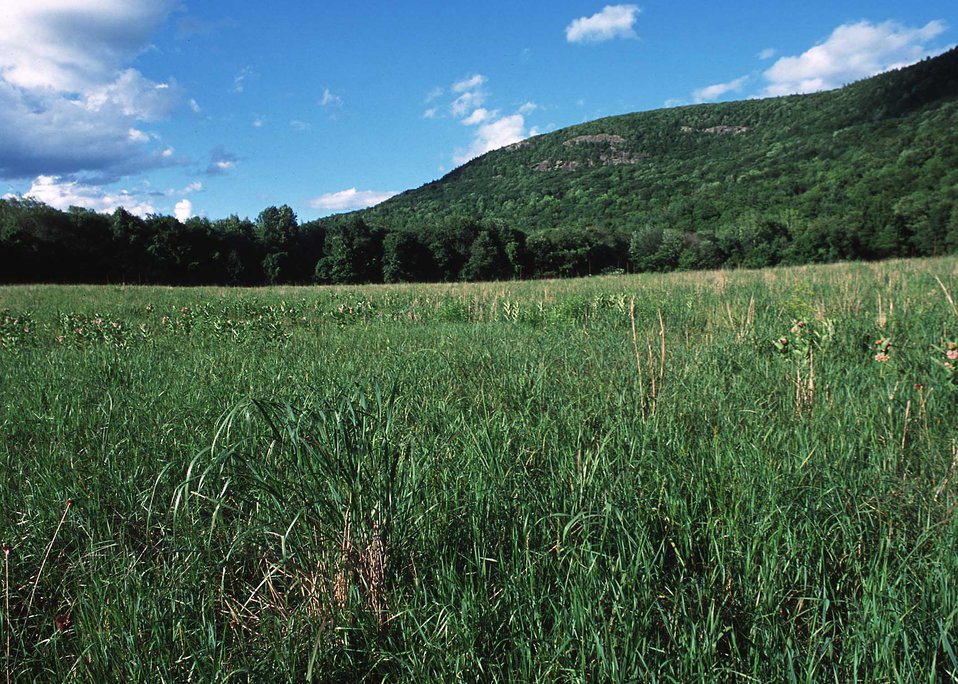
Warm season grassland habitat restoration project in Litchfield County.